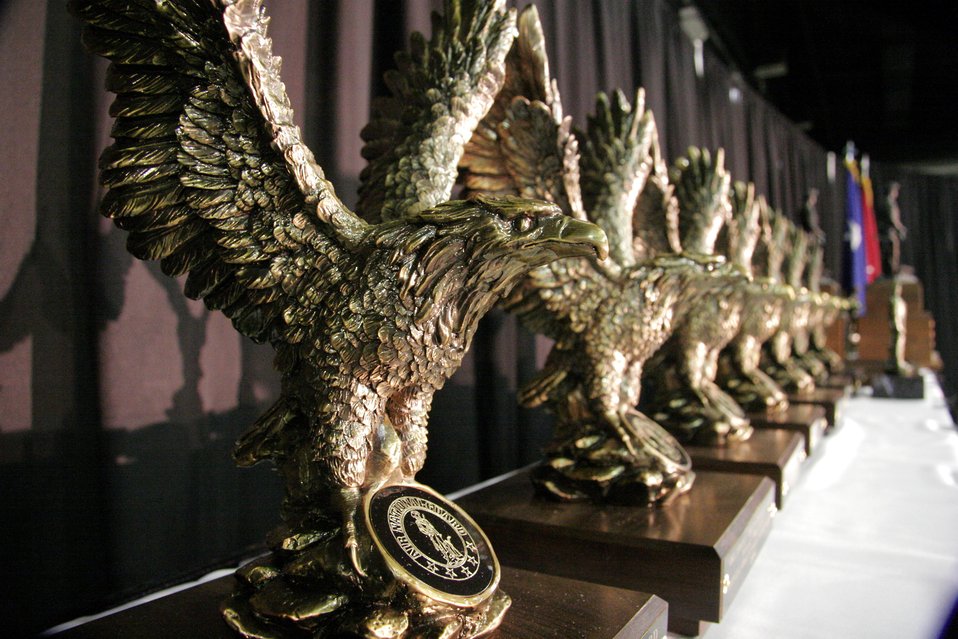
Oklahoma Military Ball

Awards are lined up waiting to be presented to their recipients during the National Guard Association of Oklahoma's Military Ball in Oklahoma City on Saturday, April 22, 2006. More than 500 people attended the annual event.